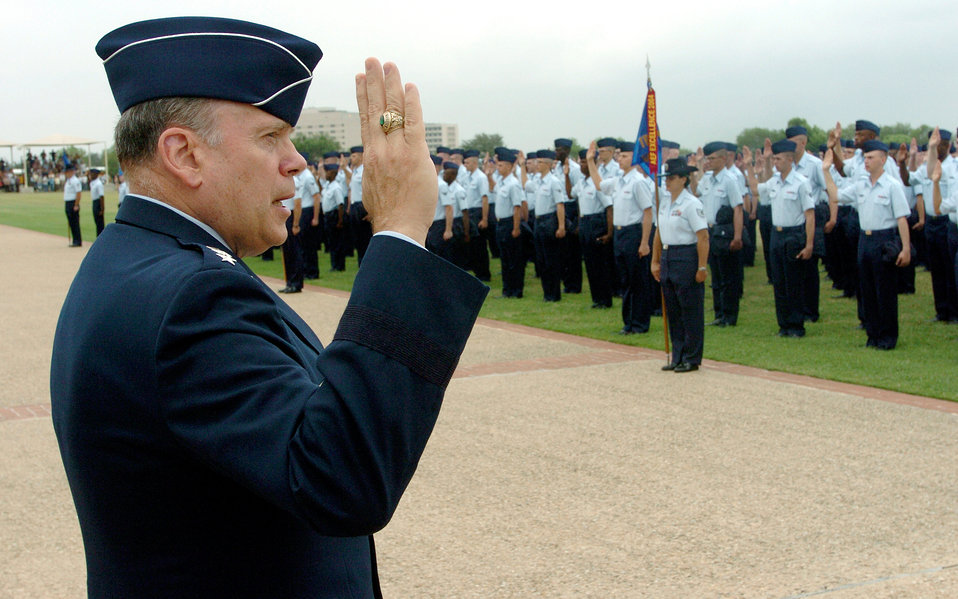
Graduation day

LACKLAND AIR FORCE BASE, Texas -- Gen. John P. Jumper, U.S. Air Force Chief of Staff, administers the oath of enlistment to Airmen graduating Basic Military Training here Oct. 22.